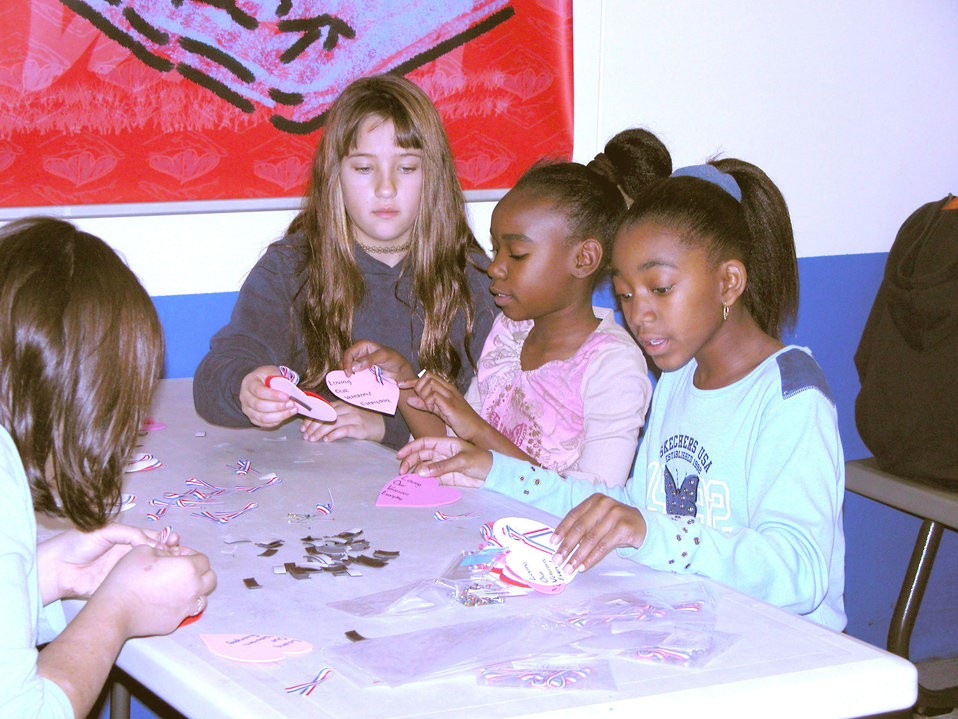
Making valentines

EGLIN AIR FORCE BASE, Fla. -- Stephanie Alvarez, Alyna Avance and Jazmyn Jordan assemble valentines at the youth center here to prepare for this year's